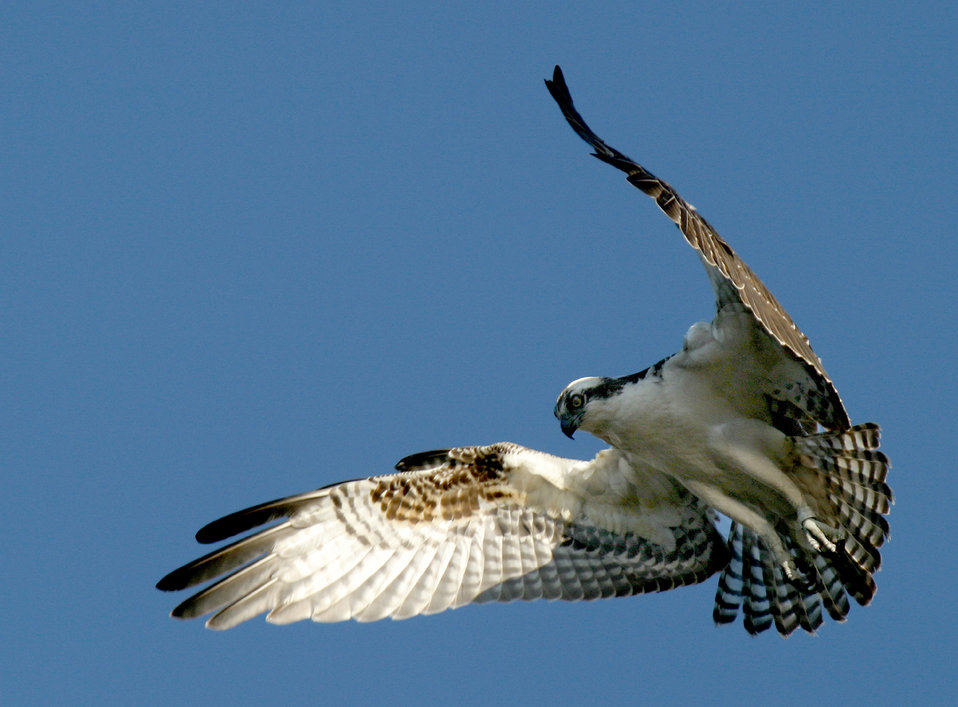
Osprey Hovering

Osprey at John Heinz National Wildlife Refuge in Philadelphia, Pennsylvania.